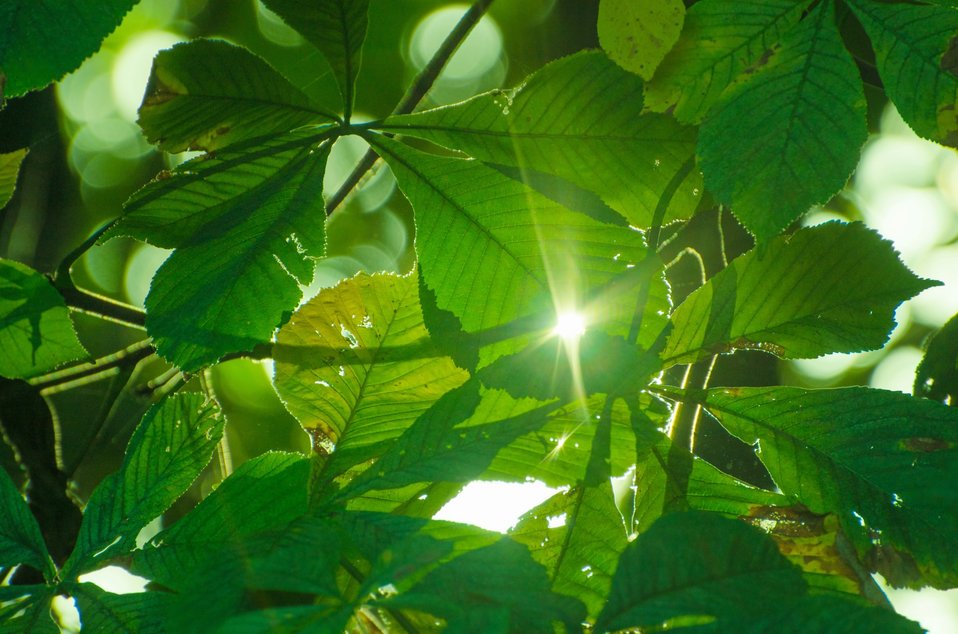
Leaves on the tree.